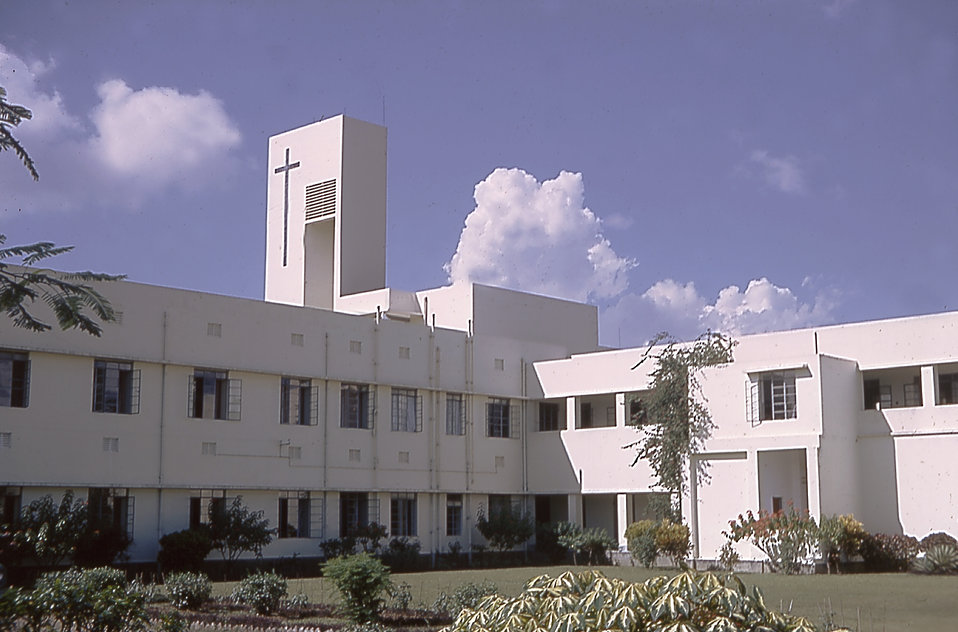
This is a 1964 photograph of the Holy Family Hospital in Dacca, East Pakistan.